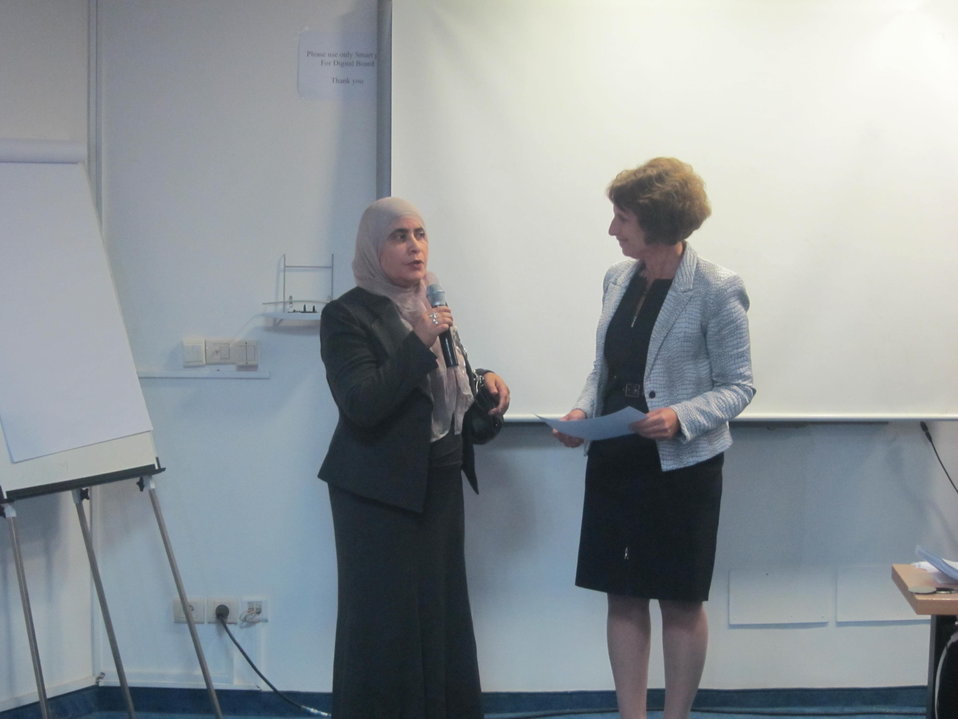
Professor Souad Rouis Speaks With Special Representative Hariton

Professor Souad Rouis, founder of BiotechRDP and Maghreb Delegation Tech Town winner in Tunisia, left; speaks with Special Representative for Commercial and Business Affairs Lorraine Hariton, right; in Tunis, Tunisia, on November 2, 2011.